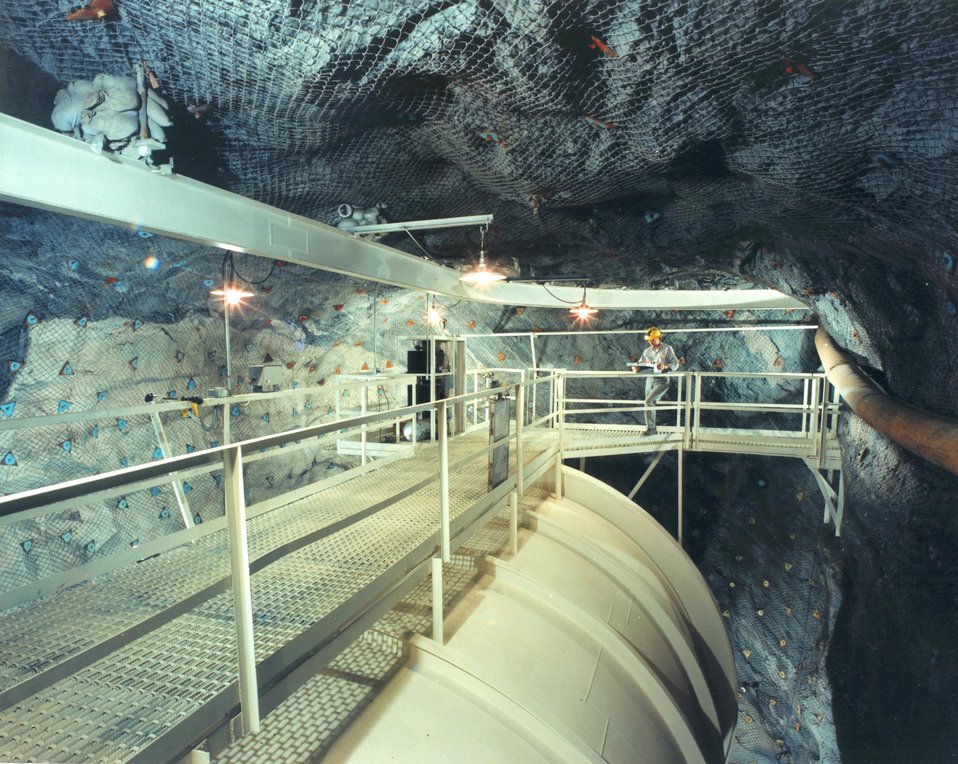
THE UNDERGROUND TANK WHERE BROOKHAVEN'S SOLAR NEUTRINO EXPERIMENT TOOK PLACE.

THE NEUTRINO INTERACTIONS IN BROOKHAVEN'S SOLAR NEUTRINO EXPERIMENT TOOK PLACE IN THIS MASSIVE TANK, ONE MILE UNDERGROUND IN THE HOMESTAKE GOLD MINE IN SOUTH DAKOTA. BROOKHAVEN SCIENTIST RAYMOND DAVIS WON THE 2002 NOBEL PRIZE IN PHYSICS FOR HIS WORK IN DETECTING SOLAR NEUTRINOS, THE GHOSTLIKE PARTICLES PRODUCED IN THE NUCLEAR REACTIONS OCCURRING IN THE CORE OF THE SUN, PROVIDING THE SUN'S ENERGY.